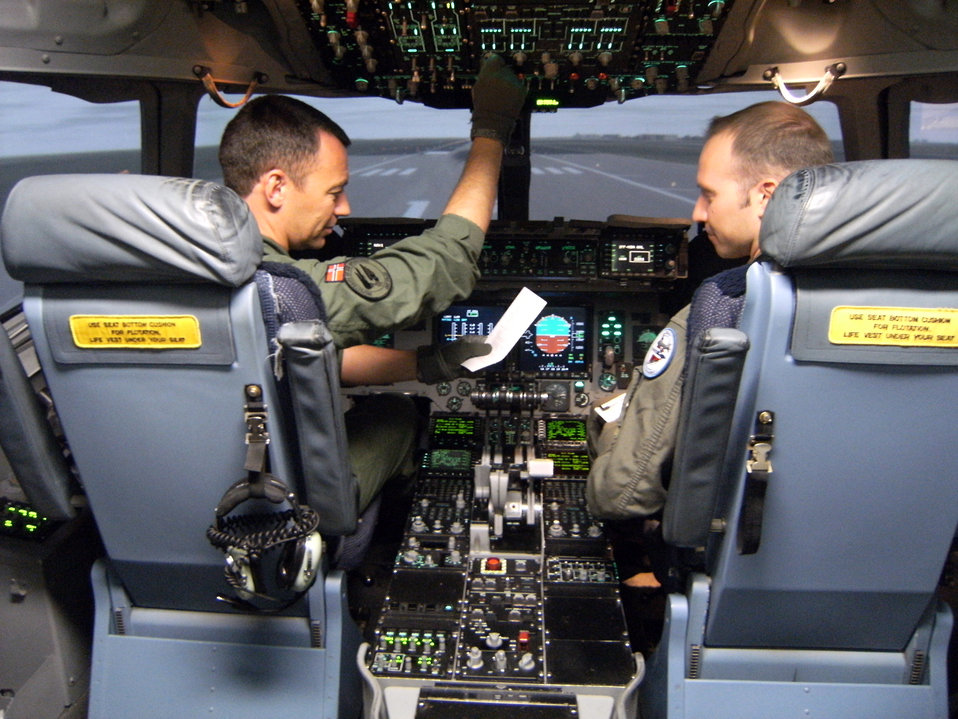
Foreign aircrew train at Altus for multi-national mission

Maj. Christian Langfeldt (left) and Capt. Oeyvind Haaheim, Norwegian air force pilots training in a C-17 Globemaster III simulator, perform a pre-flight check April 16 before